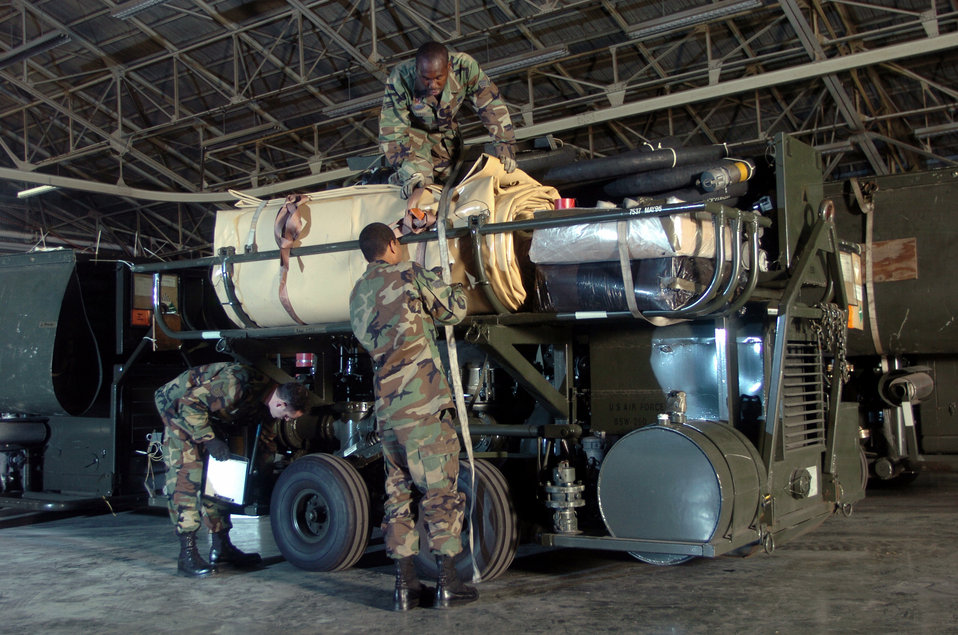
Yokota fuels specialists support global missions

YOKOTA AIR BASE, Japan -- Tech. Sgt. Charles Egri (left), Senior Airmen David Cameron (top) and Dwayne Gooden inspect an R-14 air transportable hydrant refueling system during inspection here. The R-14 can be airlifted or ground shipped anywhere in the world and made fully operational in a matter of hours. Each unit contains a pump; two 50,000-gallon bladder tanks; and all the hoses, valves, and fittings necessary for operation. The Airmen are assigned to the 374th Logistics Readiness Squadron's fuels mobility support equipment element.